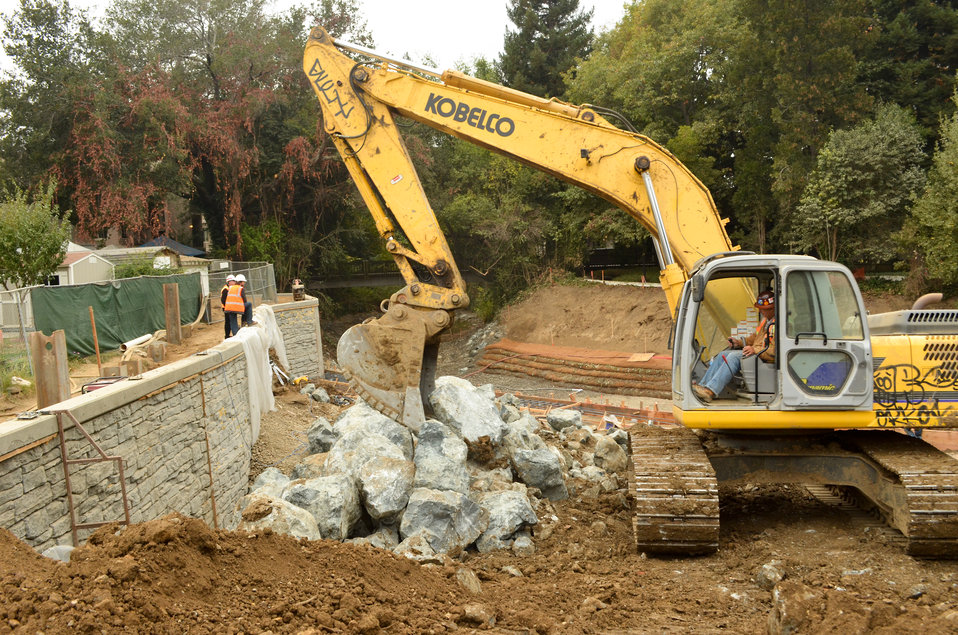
Finishing up box culverts in Napa Creek

Crews prepare the entrance for Napa Creek’s high water flows into underground water tunnels Oct. 12, 2012, in Napa, Calif. The project – which also includes replacing a low bridge and installing underground water tunnels – offers flood water an easier path from the creek to Napa River, instead of overflowing and flooding nearby homes and businesses as it does on average every three to five years. A joint effort between the U.S. Army Corps of Engineers, the city of Napa and the Napa County Flood Control and Water Conservation District to reduce the city's flood risk, the $14.8 million Napa Creek project is funded by the American Recovery and Reinvestment Act of 2009.